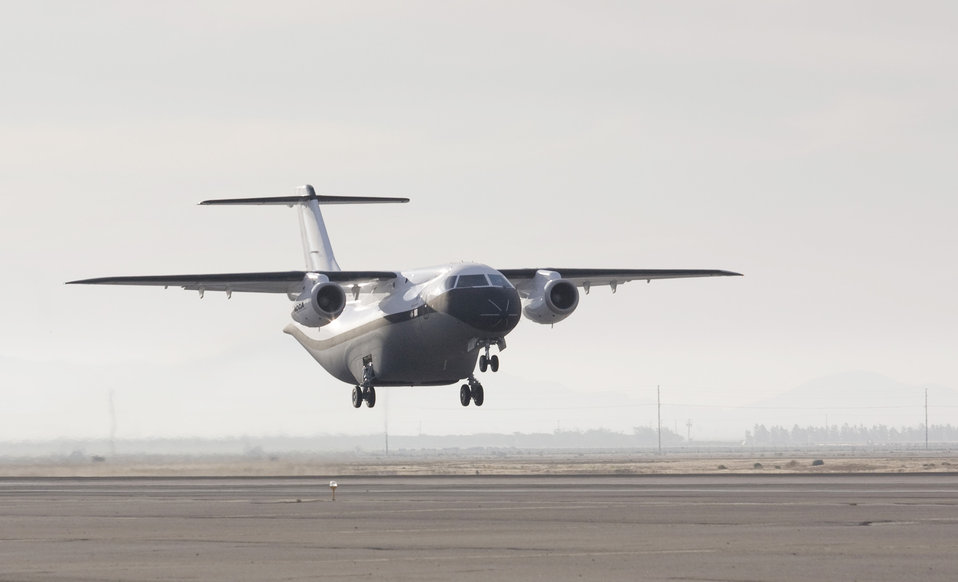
Advanced composite cargo aircraft makes first flight

The Advanced Composite Cargo Aircraft made its first test flight June 2 from Air Force Plant 42 in Palmdale, Calif. The ACCA is proof of concept technology demonstrator for advanced composite manufacturing processes in a full-scale, certified aircraft. It was developed by Air Force Research Laboratory and Lockheed Martin officials.